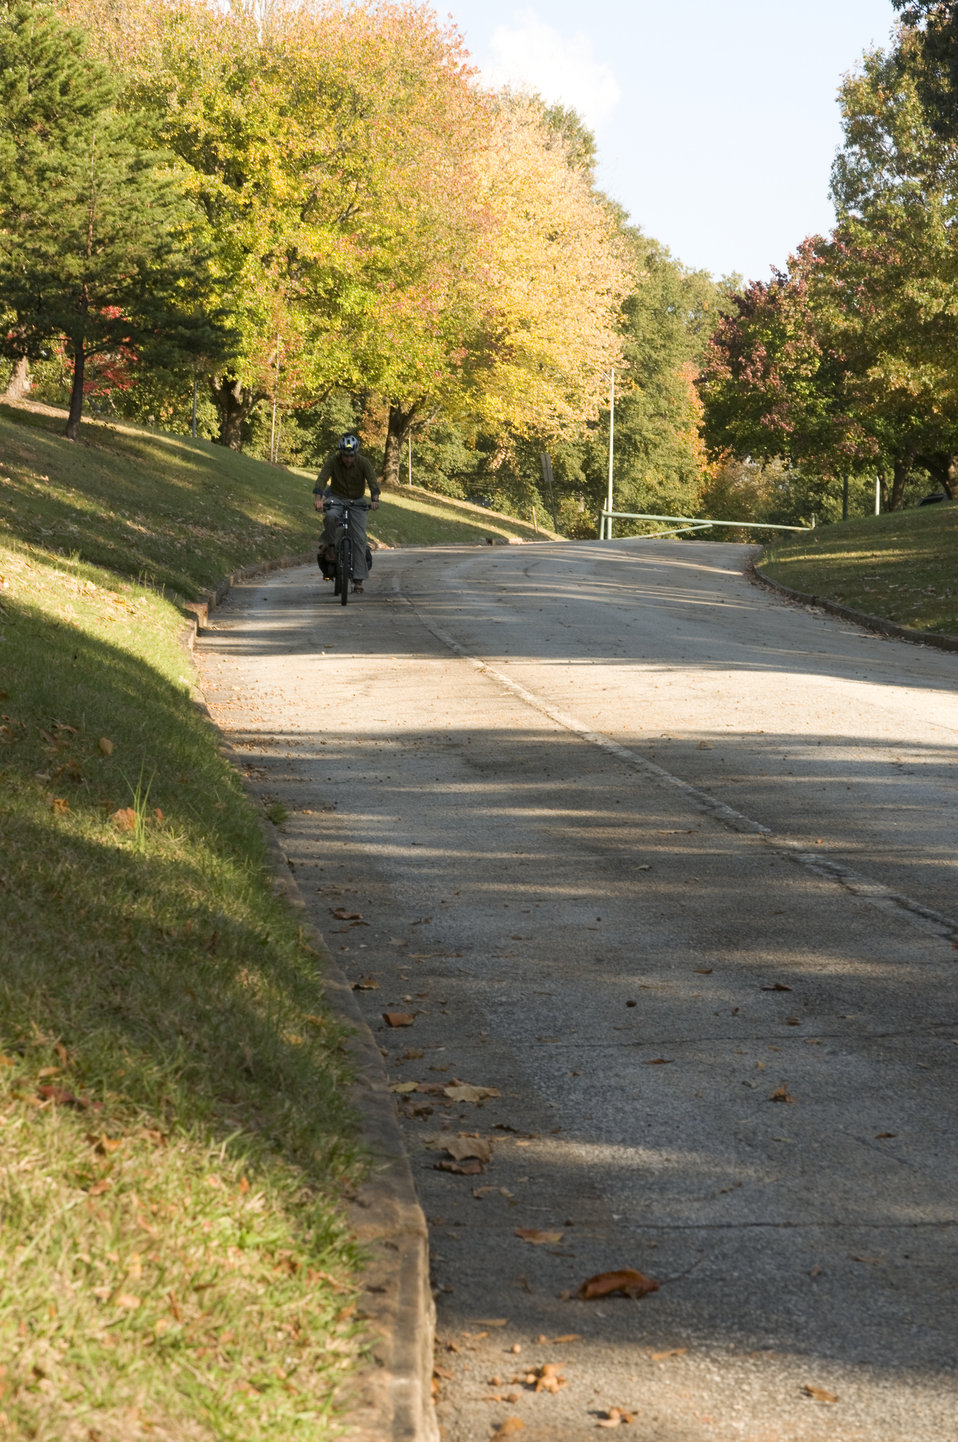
This photograph depicts a male bicyclist, who was riding his bicycle on a sunny Georgia morning, on a road less traveled. He was wearing a protective, aerodynamic helmet, and the snug fitting pants, both of which added to an overall safer bike ride, however, it would have also added to a safer trip if he had worn some brightly-colored outerwear. Even though the roadway was quiet, it is also important that he was riding in the designated bicycle traffic lane, and abiding by the proper rules of the road, which govern drivers of both bicycles, and motorized vehicles.